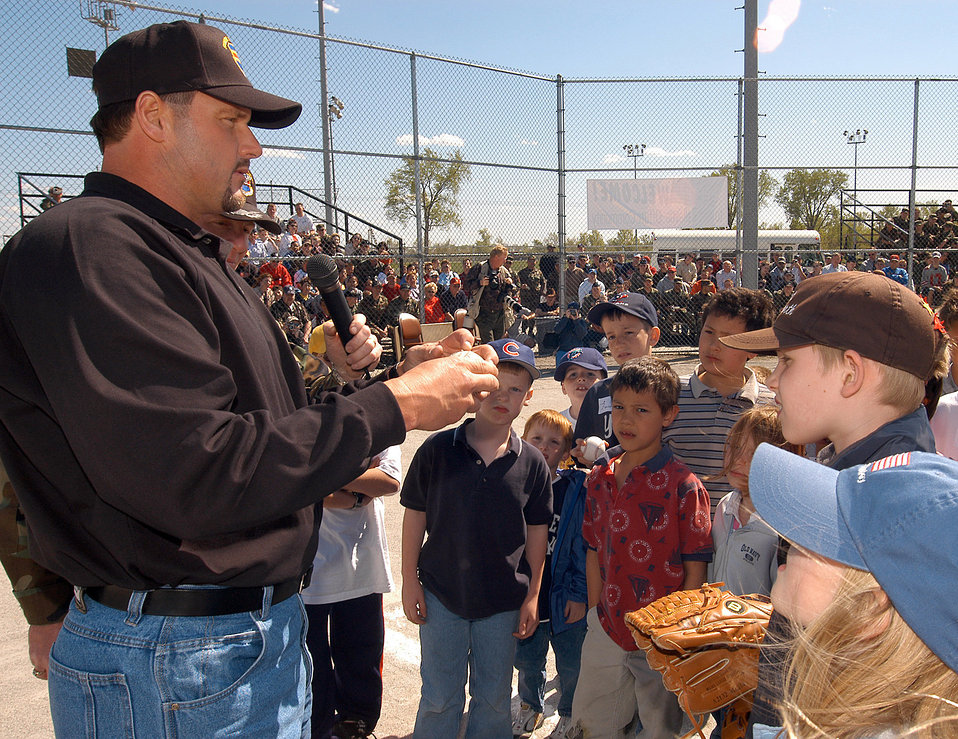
'The Rocket' lands at Offutt

OFFUTT AIR FORCE BASE, Neb. -- Houston Astros pitcher Roger Clemens meets with children here April 26 during a pitching seminar and demonstration. Mr. Clemens visited as part of a United Service Organizations tour.